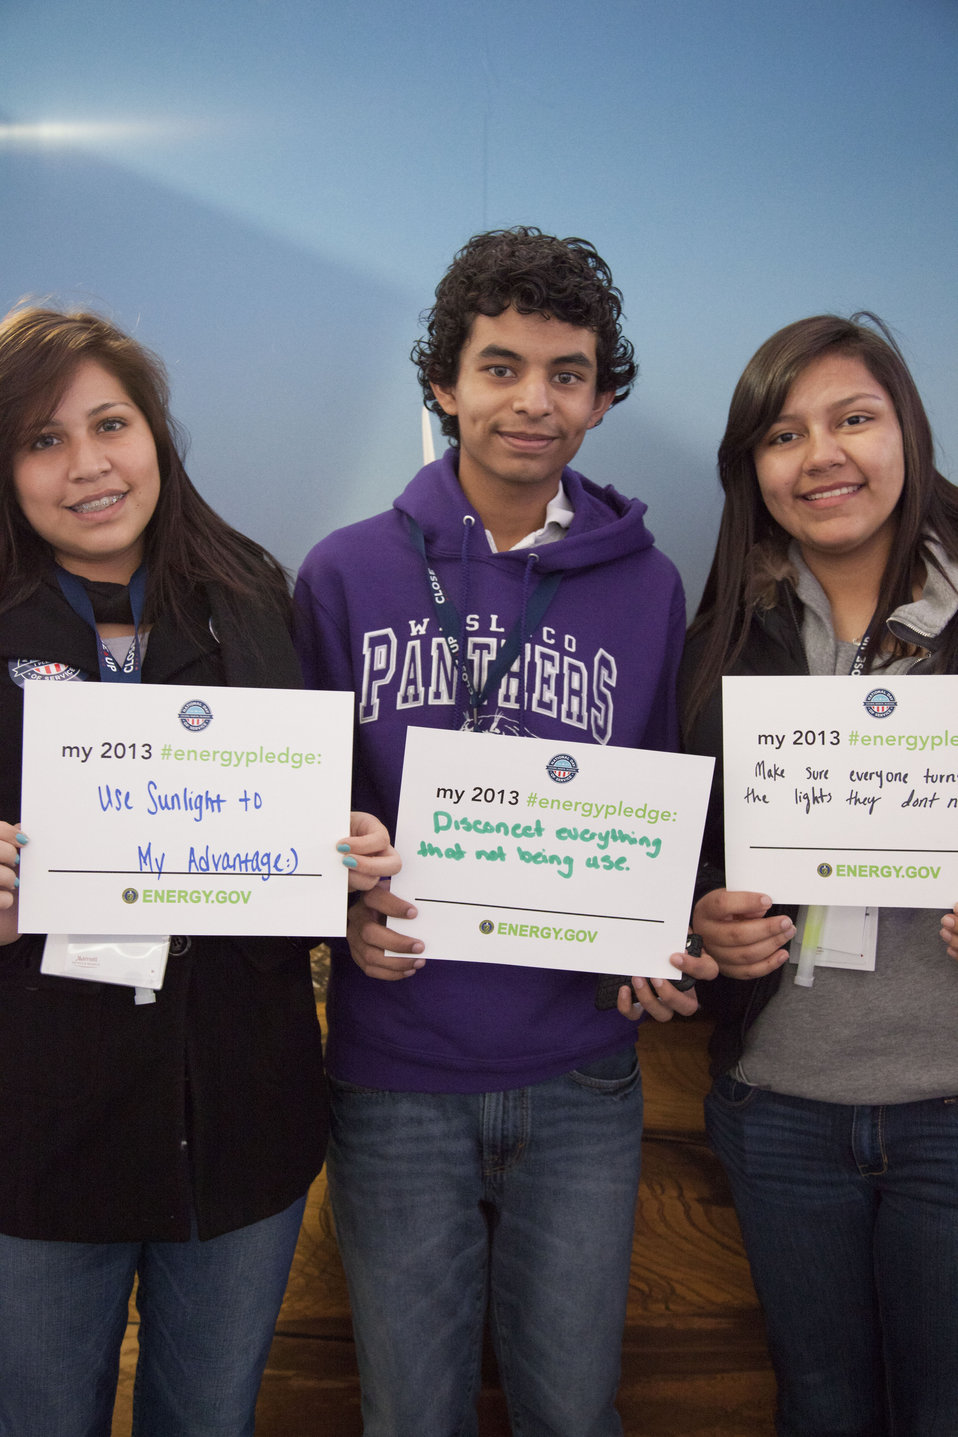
What's your #energypledge?